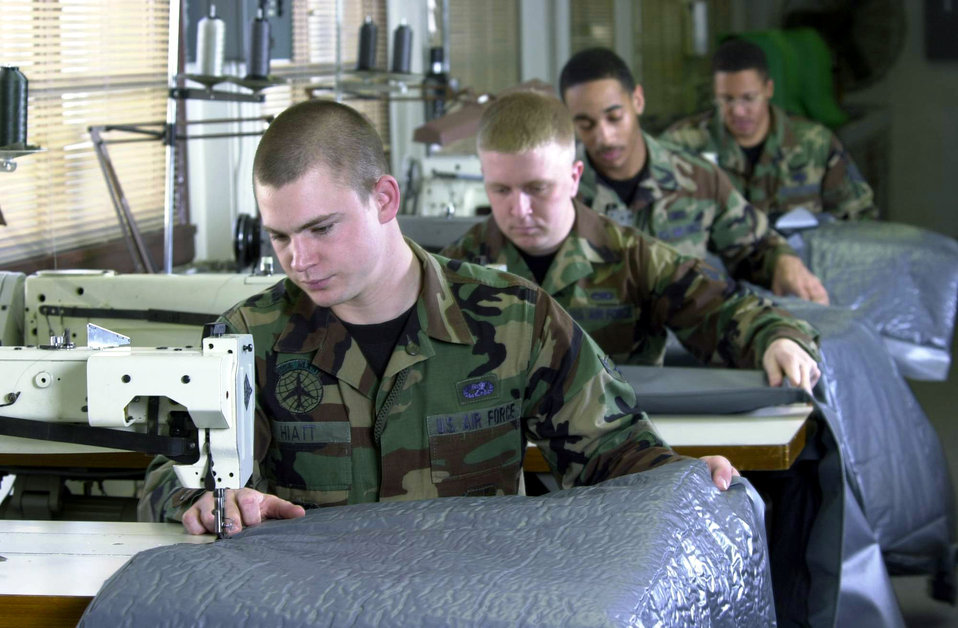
Making new insulation

YOKOTA AIR BASE, Japan -- (Front to back) Airman 1st Class Brian Hiatt, Senior Airman Kyle Richardson, Aiman Mark McMorris and Staff Sgt. Sam Farrell sew aircraft insulation pieces.. The airmen are replacing the green C-130 Hercules aircraft interior insulation pieces here with the gray-colored ones during a refurbishing program. The airmen are all survival equipment technicians from the 374th Maintenance Squadron.